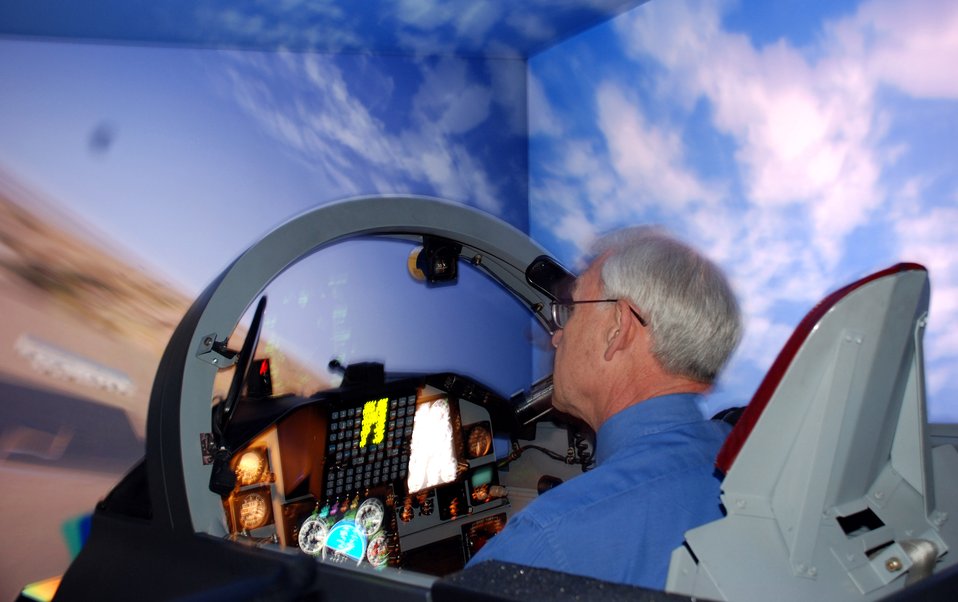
Former NATO, U.S. leaders return to Sheppard for anniversary

Retired Brig. Gen. Travis Harrell tries out the 80th Flying Training Wing's flight simulator March 26 at Sheppard Air Force Base, Texas. Former members of the Euro-NATO Joint Jet Pilot Training reunited for a 25th anniversary celebration. General Harrell was the commander of the Euro-NATO Joint Jet Pilot Training from Dec. 22, 1987, to July 20, 1989.